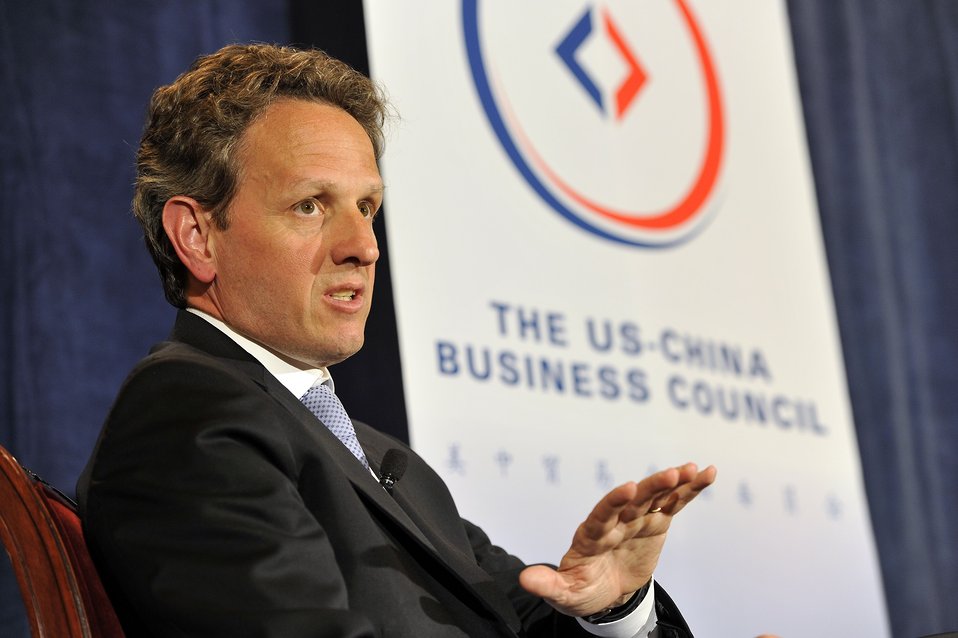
U.S.-China Business Council

At the U.S.-China Business Council, Secretary Geithner highlighted the shifts taking place in China’s economic policy orientation that benefit China, the United States, and the global economy.